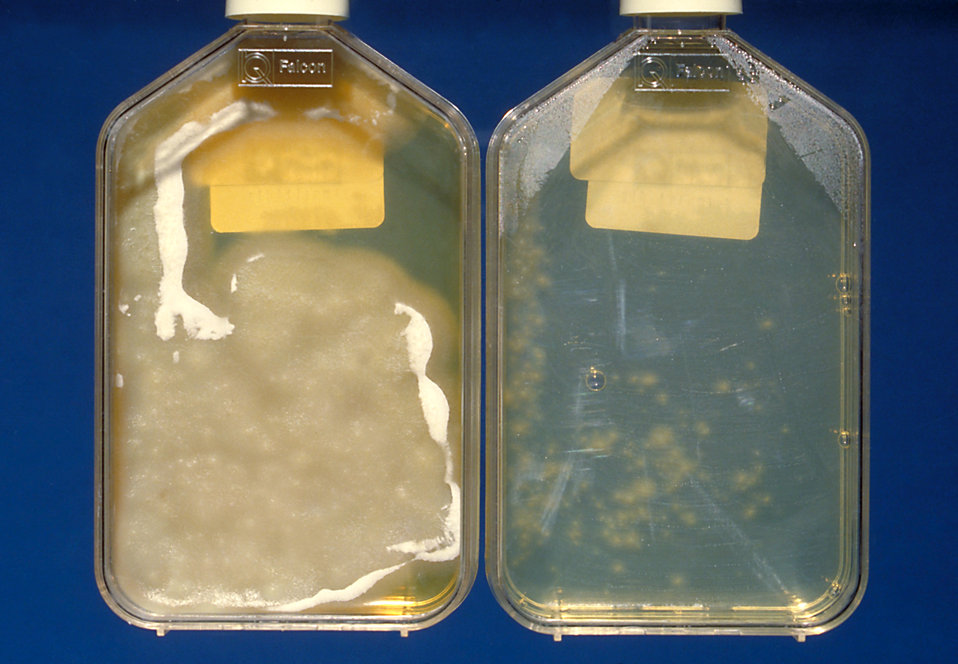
The left bottle Histoplasma capsulatum culture growth is shown at 8wks and the right bottle is shown at 3wks.